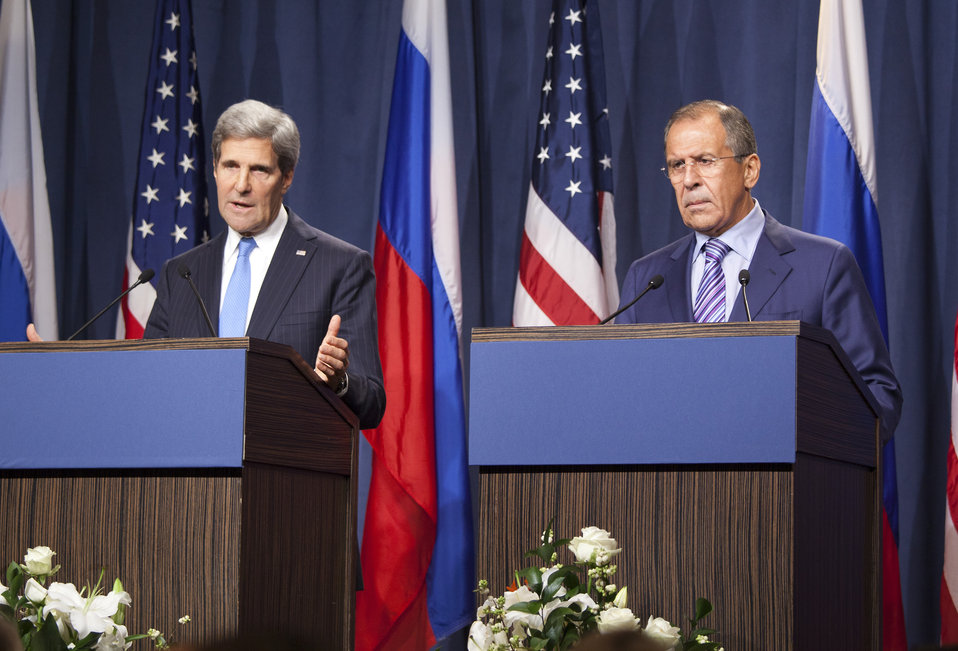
Secretary Kerry and Russian Foreign Minister Lavrov Address Press in Geneva

U.S. Secretary of State John Kerry and Russian Foreign Minister Sergey Lavrov make joint statements at the start of talks aimed at ridding Syria of chemical weapons in Geneva, Switzerland on September 12, 2013.